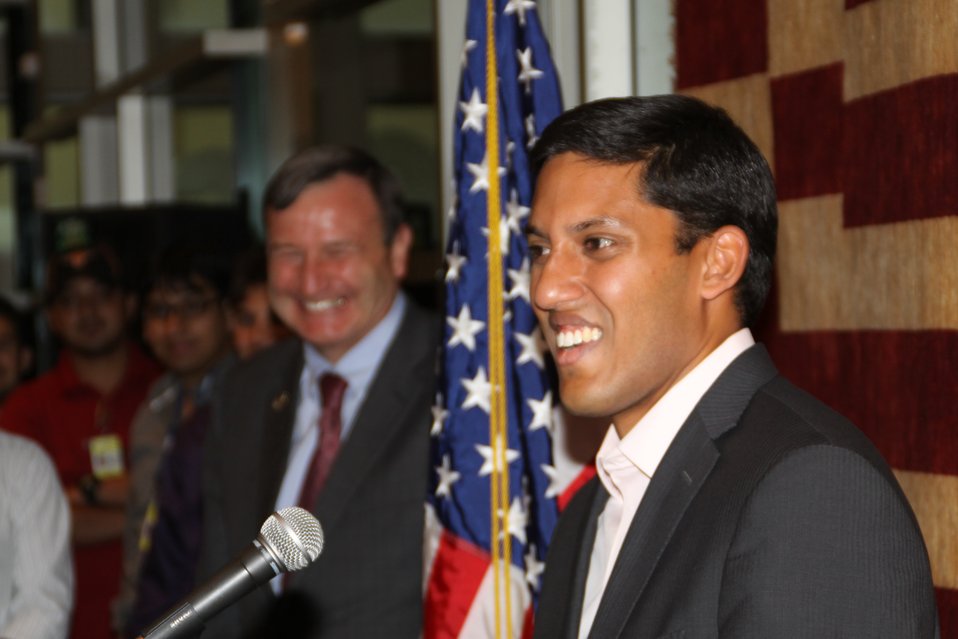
US Embassy Town Hall July 21, 2010